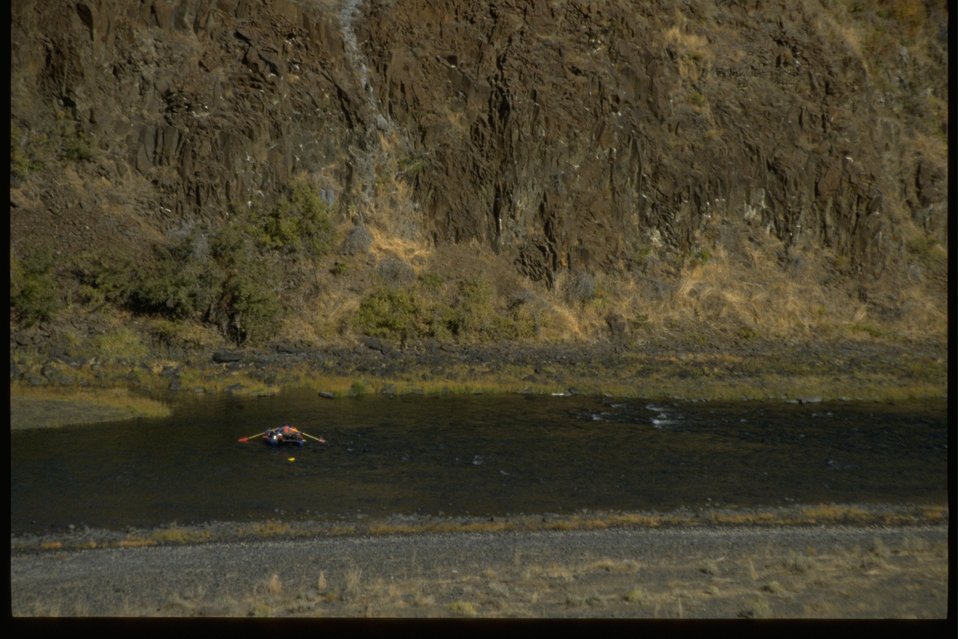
Photo in a seven series collection of a rafter on the John Day River. Raft in small rapids (350 cfs).